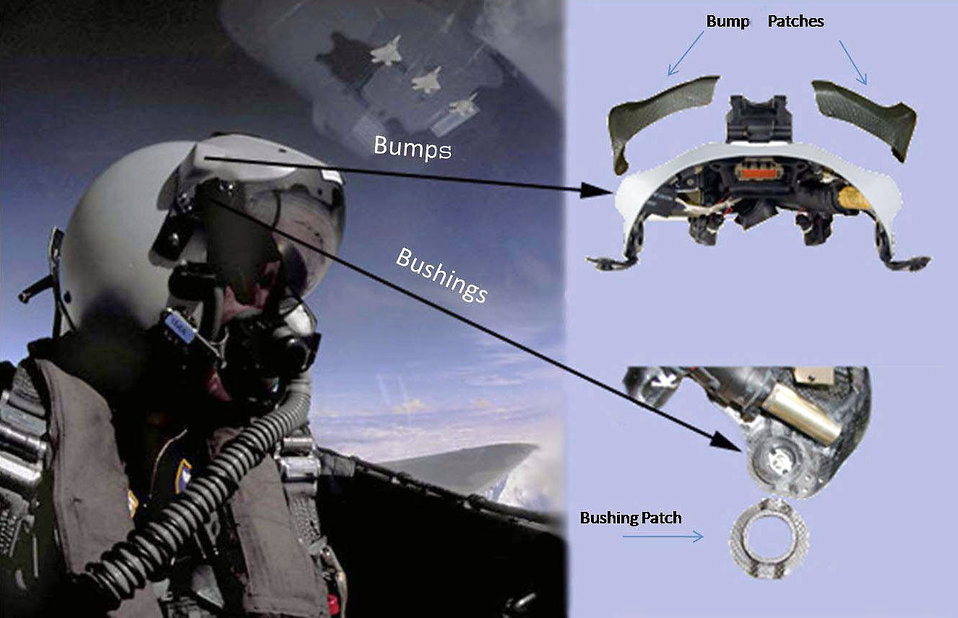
Engineers develop cost-saving repair for damaged helmets

A fighter pilot wearing a Joint Helmet Mounted Cueing System is shown on the left. Helmet repairs developed by Air Force Research Laboratory engineers at Wright-Patterson Air Force Base, Ohio, are shown on the right.